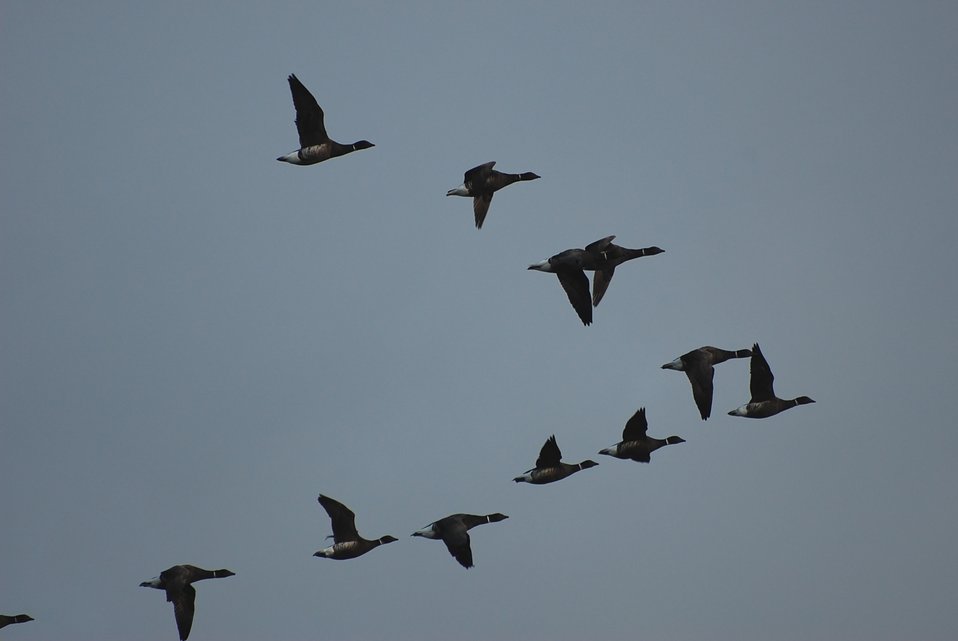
Brant at Izembek Lagoon, Izembek National Wildlife Refuge